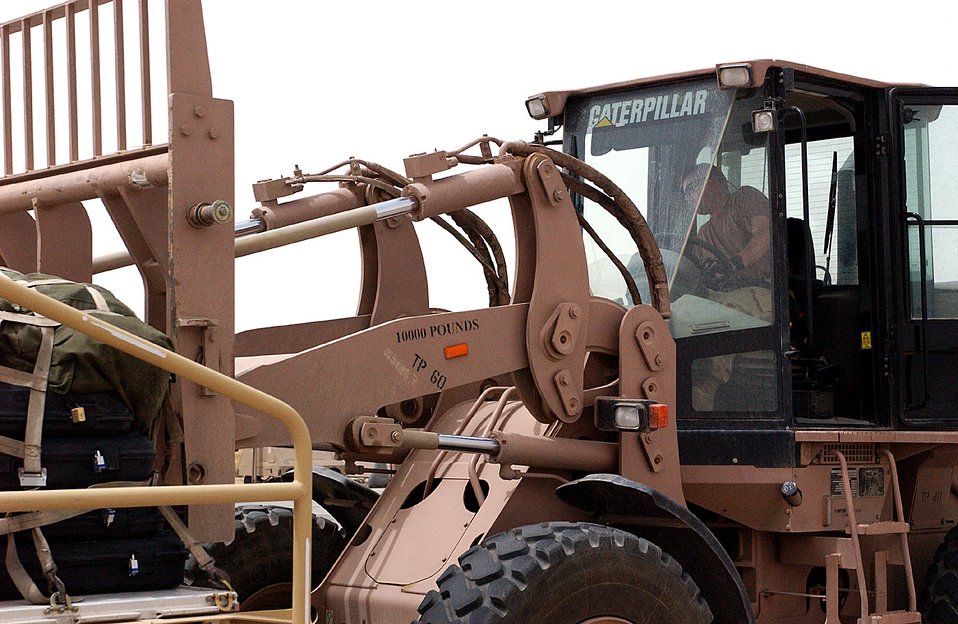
Pushing freight: ATOC moves cargo in, out of Ali quickly

Staff Sgt. Joe Lankford uses a five-ton forklift to preposition baggage for loading on a C-130 Hercules on the ramp at Ali Base, Iraq. Sergeant Lankford works in the Air Terminal Operations Center and is assigned to the 407th Expeditionary Logistics Readiness Squadron.